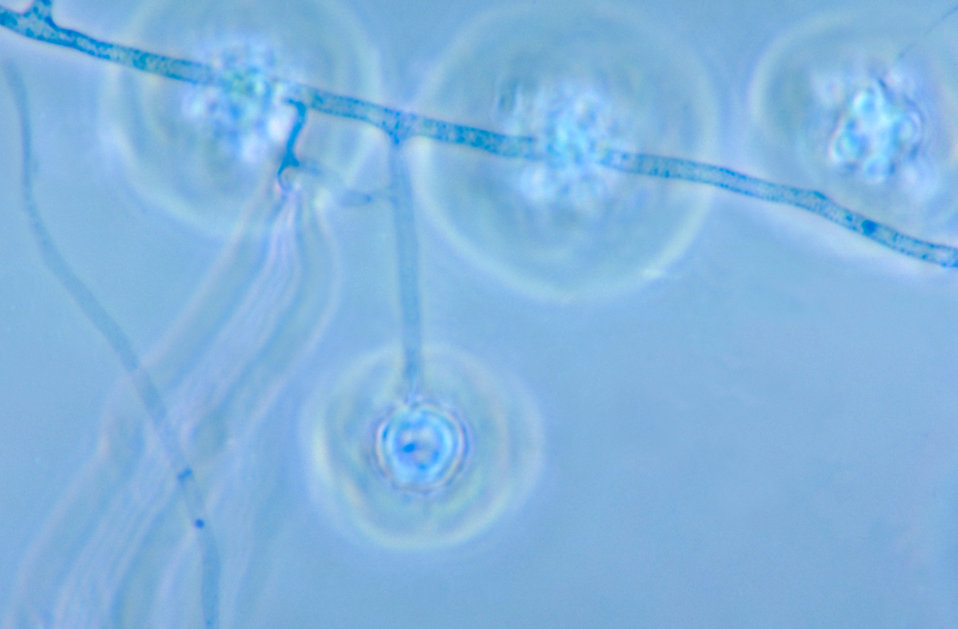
This photomicrograph reveals a conidiophore of the fungus Histoplasma capsulatum.